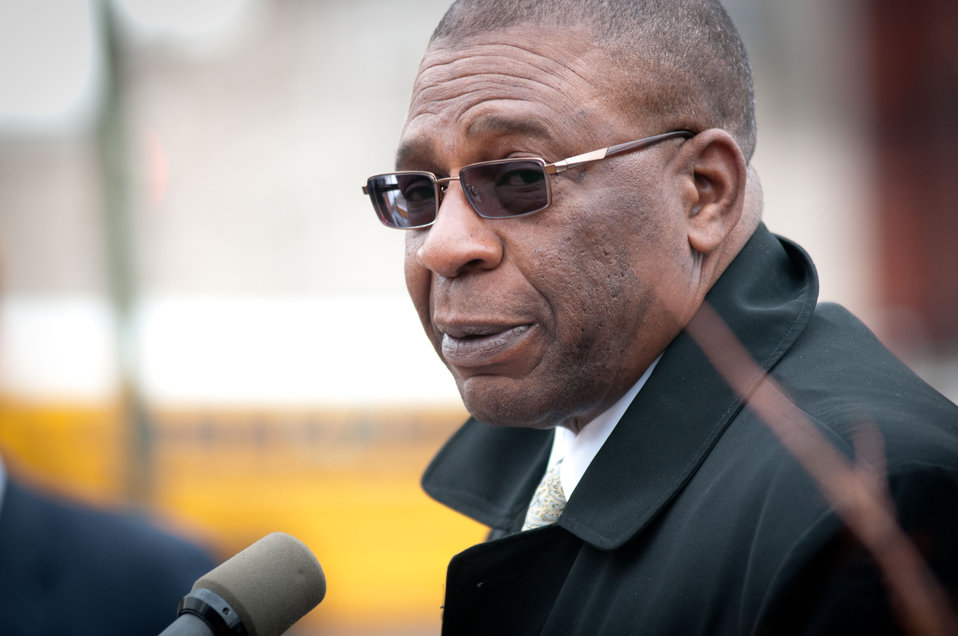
District of Columbia, Department of Transportation Director Terry Bellamy speaks to the guests at the Celebration of Tu B’Shevat “The New Year of the Trees” held on the District of Columbia’s western lawn next to the United States Department of Agriculture (USDA) Headquarters, Whitten Building at 14th Street and Independence Ave SW, in Washington, D.C. on Wednesday, February 8, 2012.